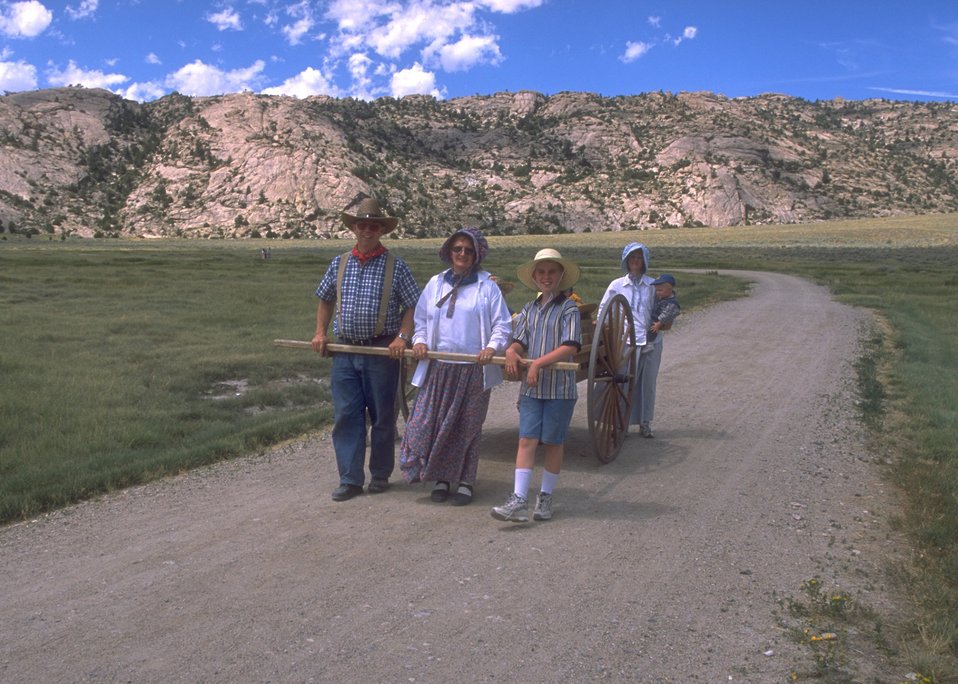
Handcart re-enactment on the Mormon Trail between Devil's Gate and Martin's Cove, Rawlins Field Office.